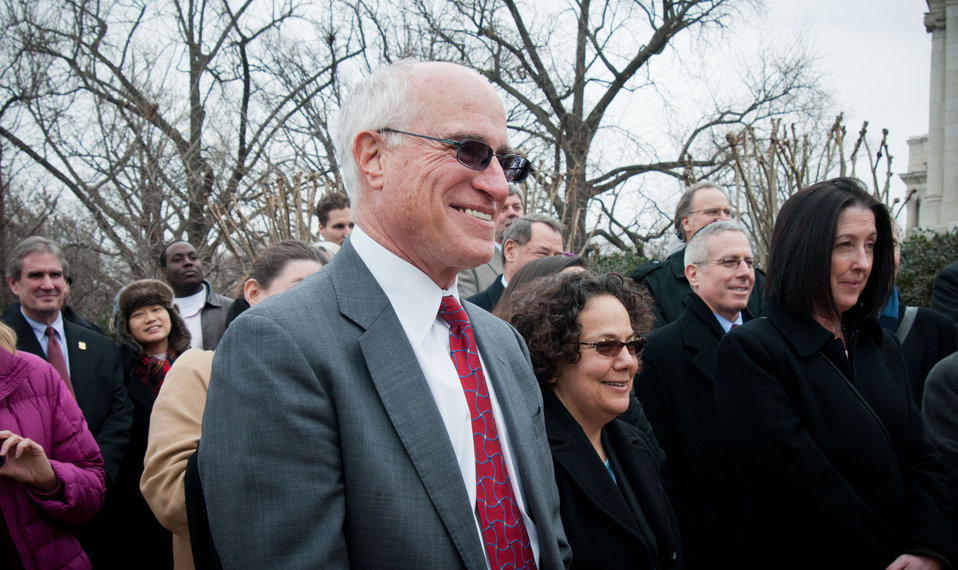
Agriculture (USDA) Under Secretary Natural Resources and Environment Harris Sherman (center) is introduced at the Celebration of Tu B’Shevat “The New Year of the Trees” event on the District of Columbia western lawn next to the USDA Headquarters, Whitten Building at 14th Street and Independence Ave SW, Washington, D.C. on Wednesday, February 8, 2012.